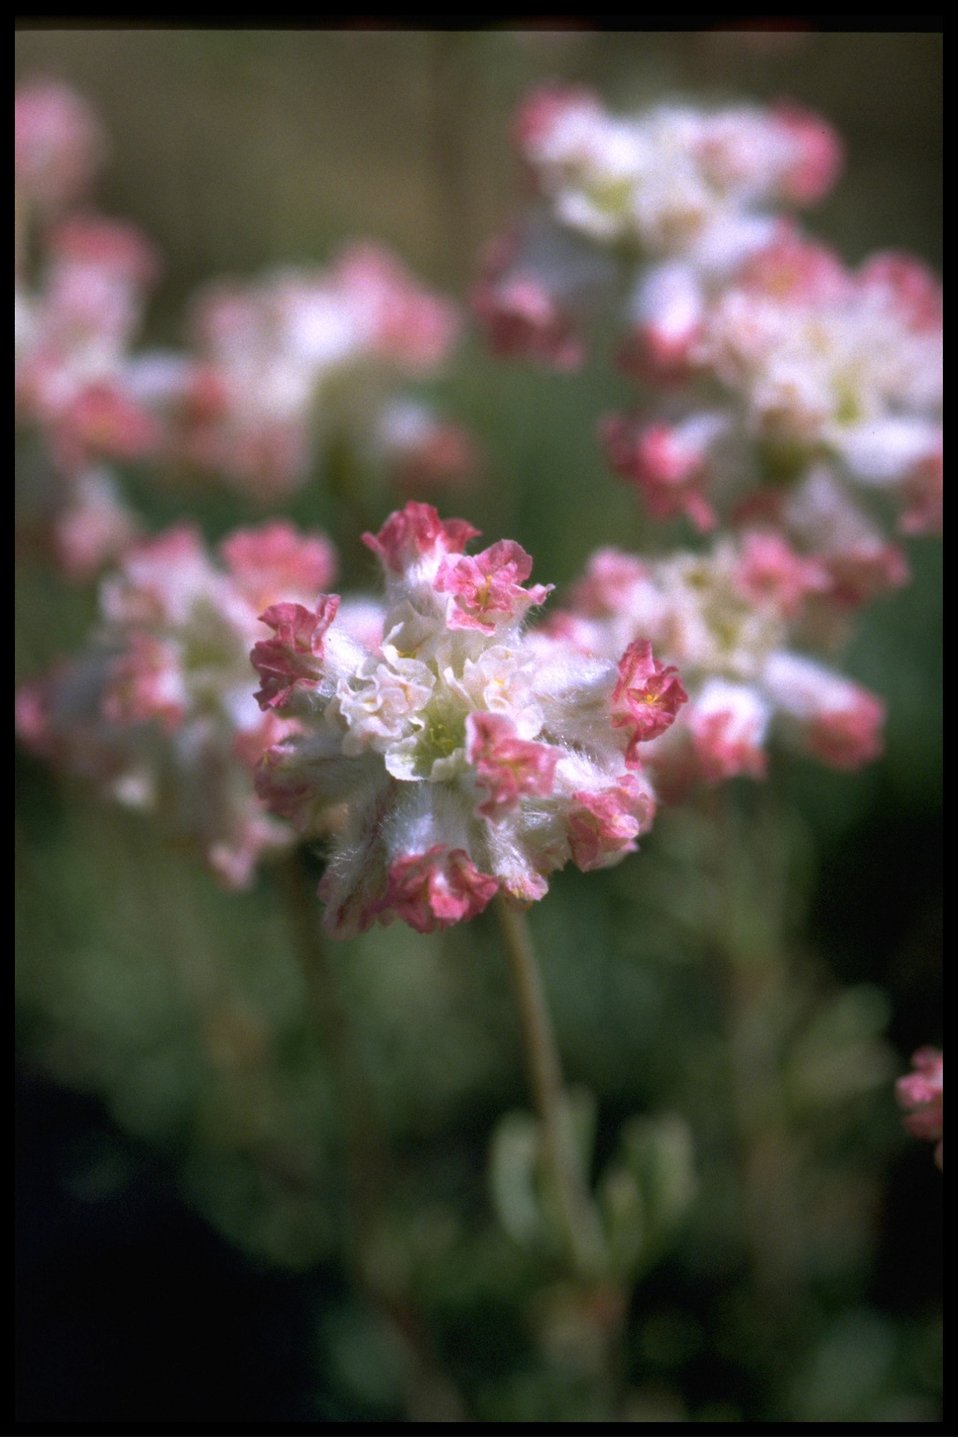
Closeup shot of Thyme-leaved buckwheat wildflowers.